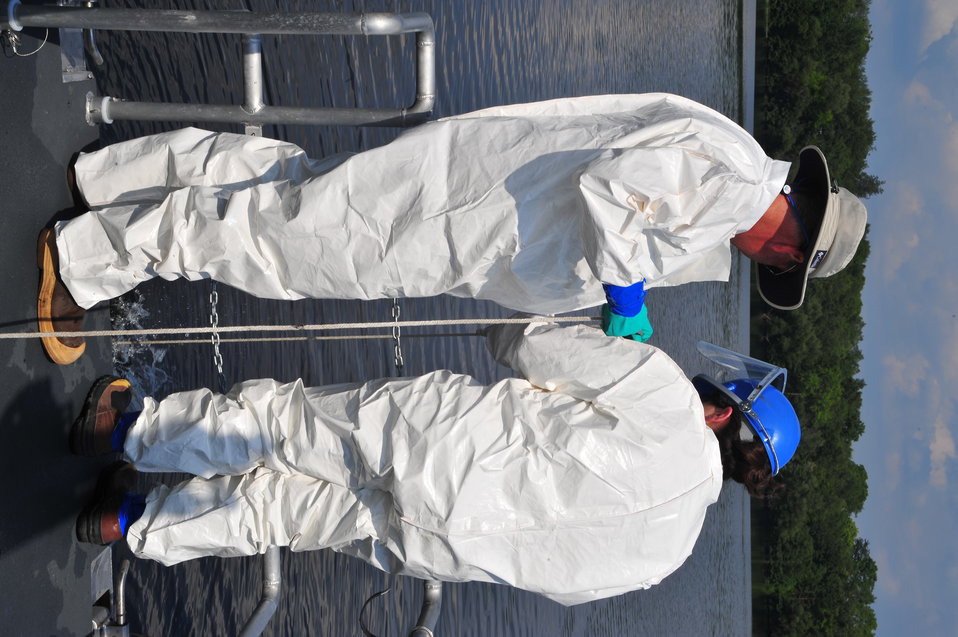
EPA's response to the Enbridge oil spill

August 2, 2010 - Water and sediment sampling operations during Enbridge Spill Response on Morrow Lake near Battle Creek, Michigan from Mudpuppy II, EPA's news research vessel.